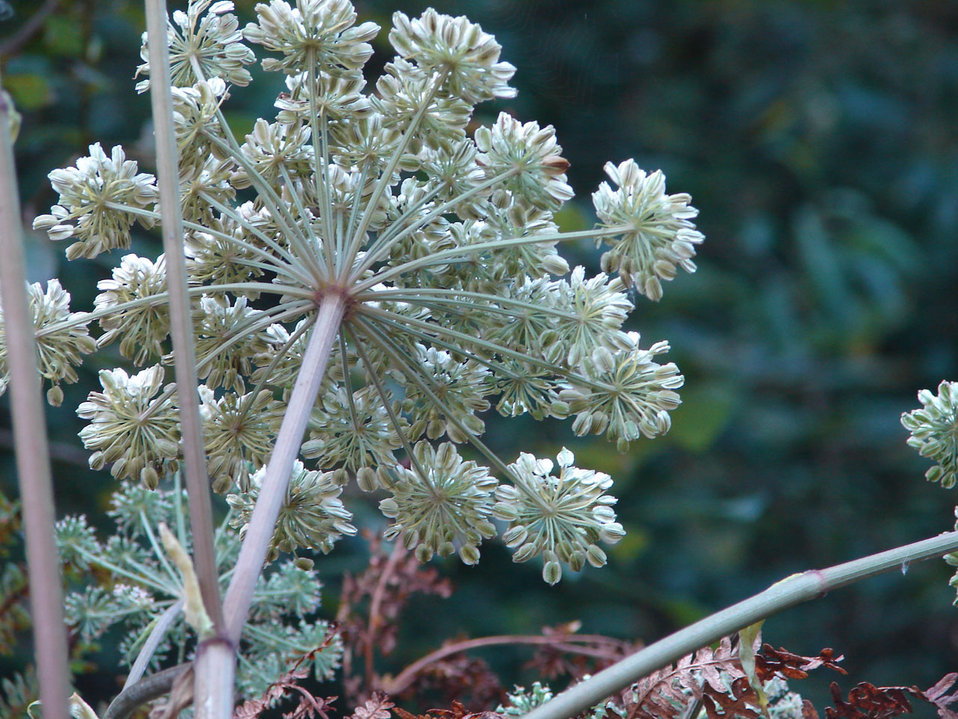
Seed head

Umbellifer seed head in september, uk.